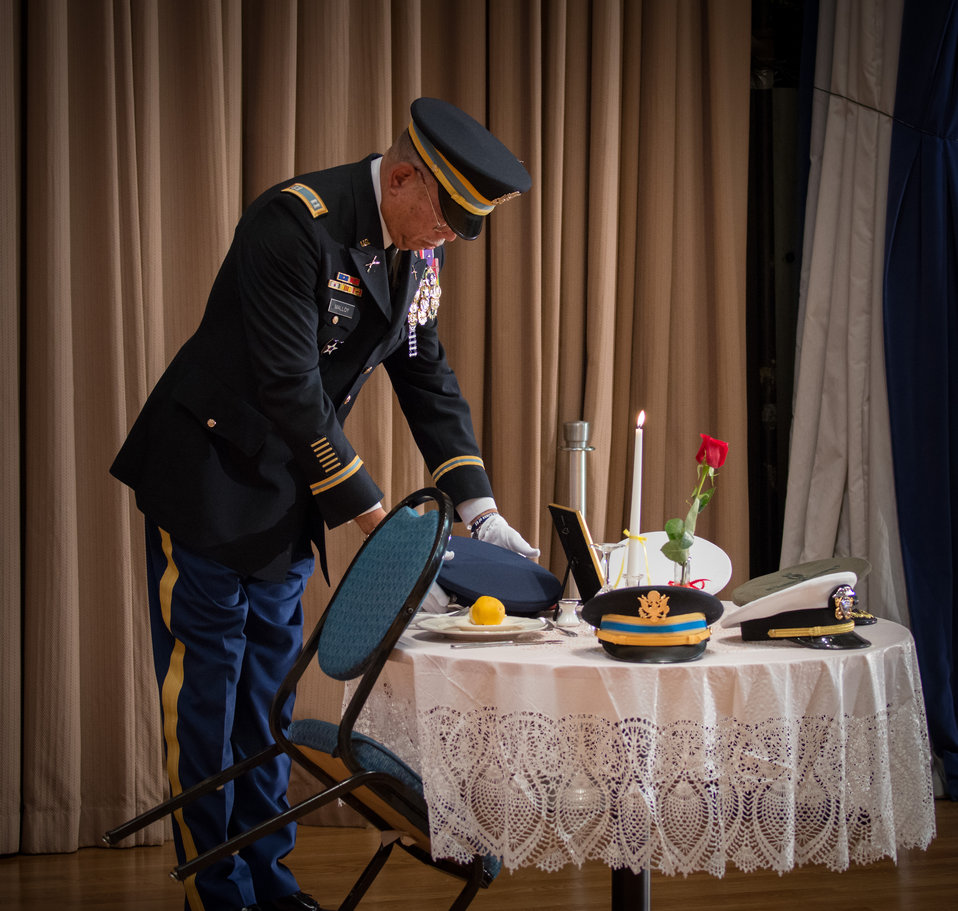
U.S. Department of Agriculture (USDA) Farm Services Agency (FSA) Office of Civil Rights U.S. Army Captain (retired) and Vietnam veteran Andrew Malloy presents the covers of the major uniformed services, during the Prisoner of War (POW)/Missing in Action (MIA) Honors Ceremony, of the 2013 U.S. Department of Agriculture (USDA) Veterans’ Day Observance, whose theme is “VALOR, COURAGE, SACRIFICE – HONORING ALL WHO SERVED,” in Washington, DC, on Wednesday, November 20, 2013.